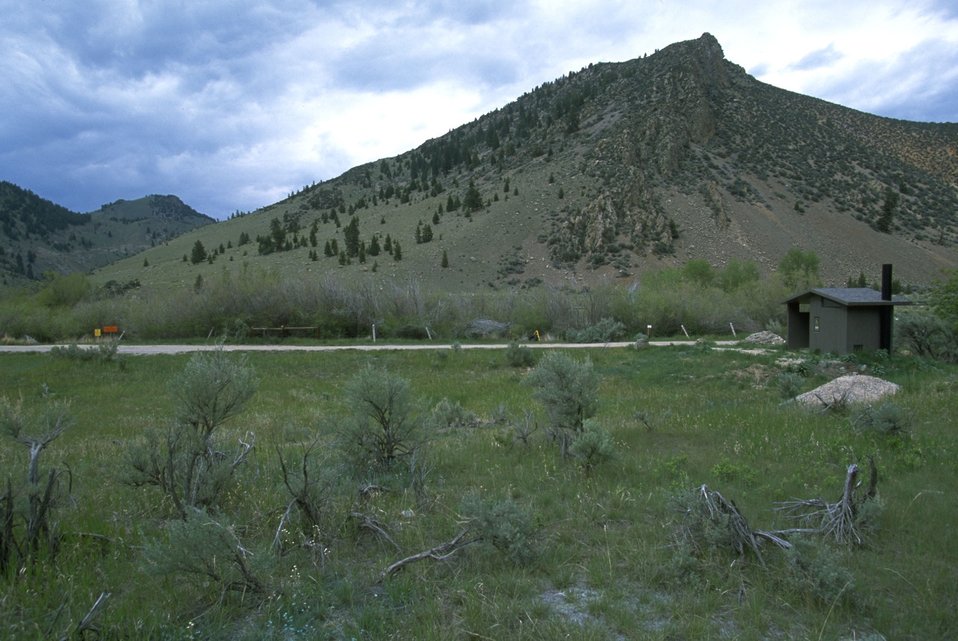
Outhouse in the Maiden Rock area